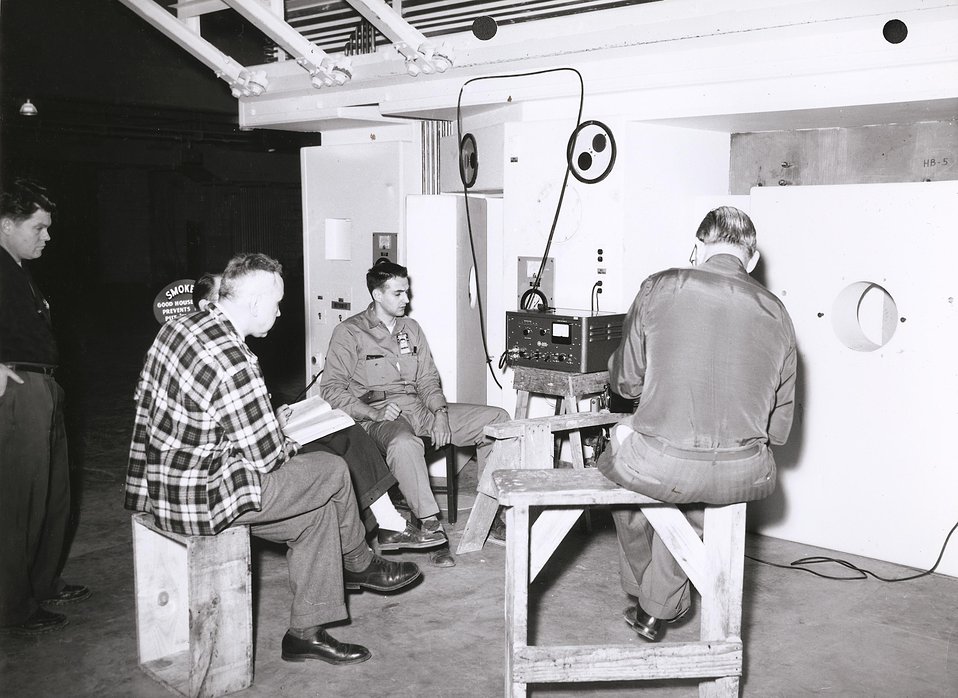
Intent on a neutron counter on the south face of the Materials Testing Reactor, March 31, 1952.